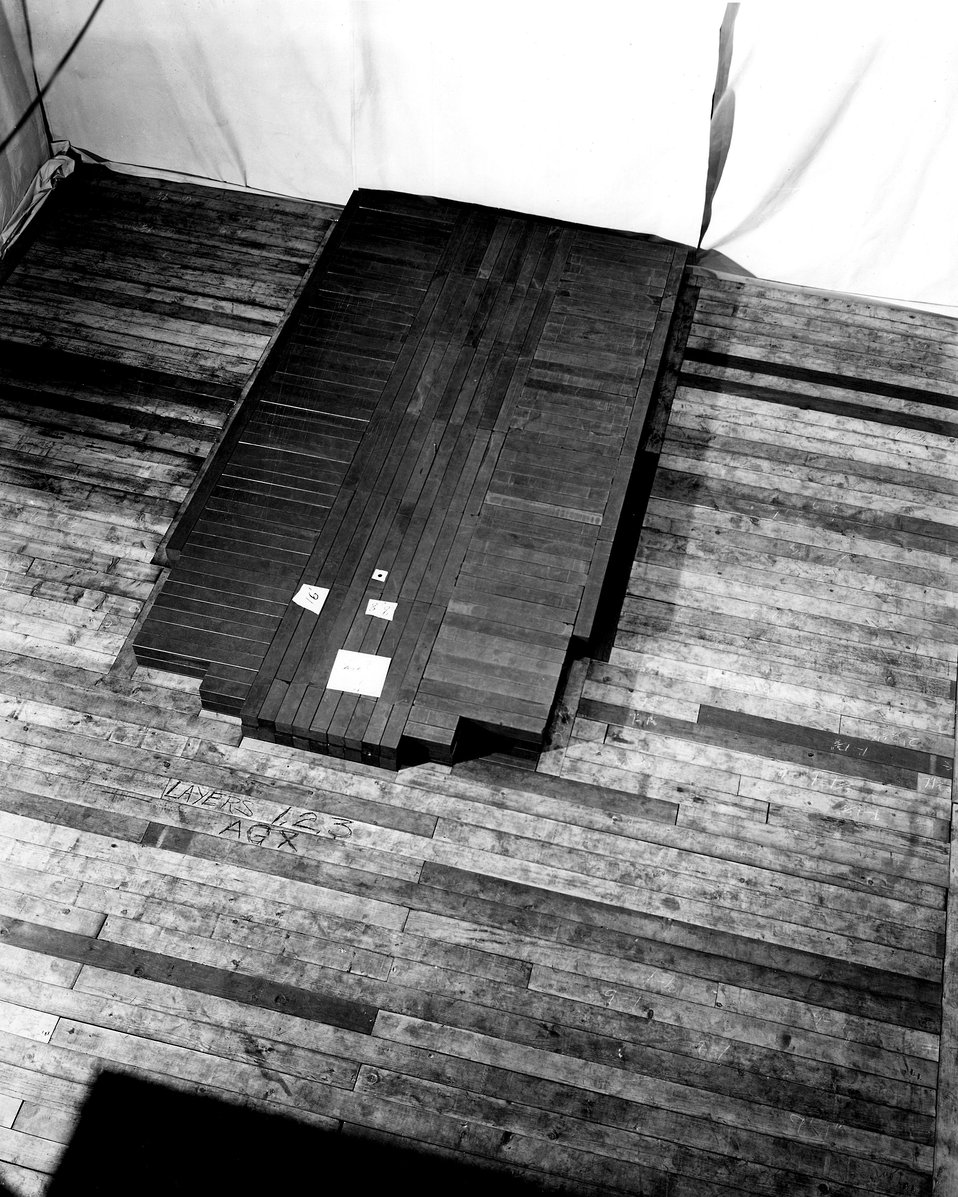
Graphite-block base of the world's first nuclear reactor assembled in the squash court under the West Stands of Stagg Field...